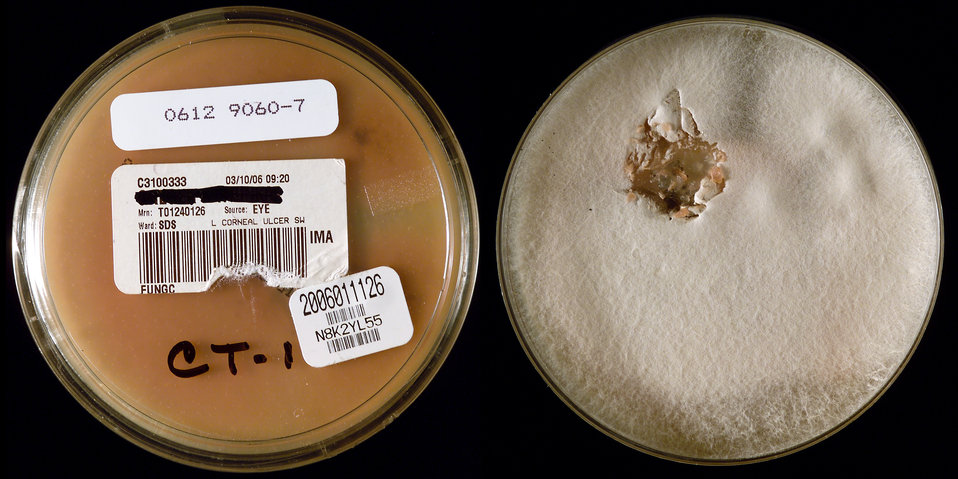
This image depicted two sides of a Petri dish which had been inoculated with a specimen obtained from a Connecticut patient's Fusarium keratitis corneal ulcer, and had subsequently grown a filamentous colony of Fusarium oxysporum fungal organisms. The type of agar medium in the case of this specimen was not known. While it is not unusual for Fusarium to cause keratitis, it was the number of affected individuals, which had increased dramatically, predominantly in persons wearing contact lenses, that had warranted this epidemiologic study. The laboratory received cultures which came from two sources: Fusarium spp. isolated from the eyes of patients with fungal keratitis, and cultures from contact lenses, cases and/or lens solution. The details of the study are being publish in the Journal of the American Medical Association (JAMA).